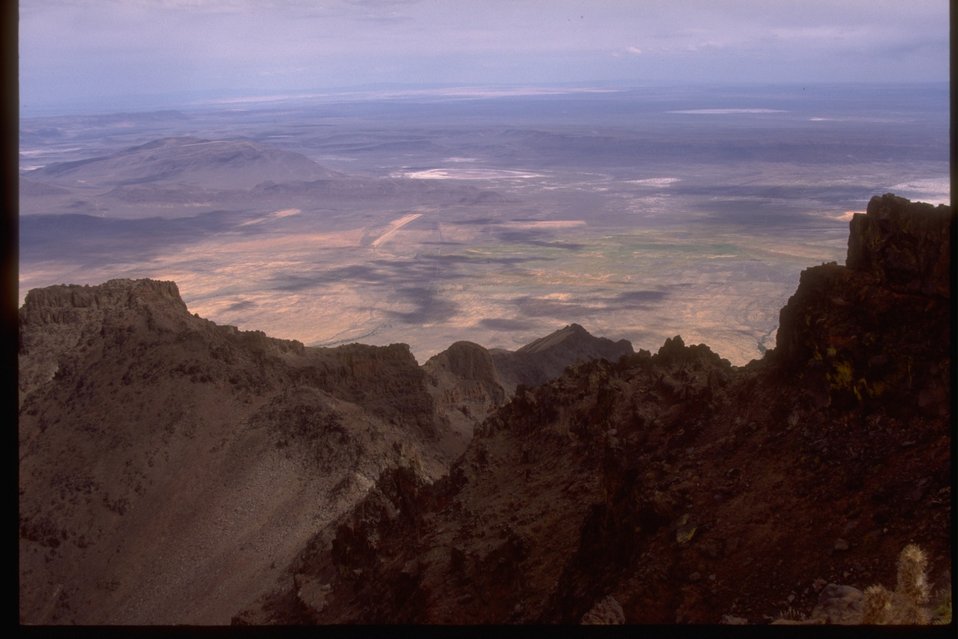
Steens Summit.